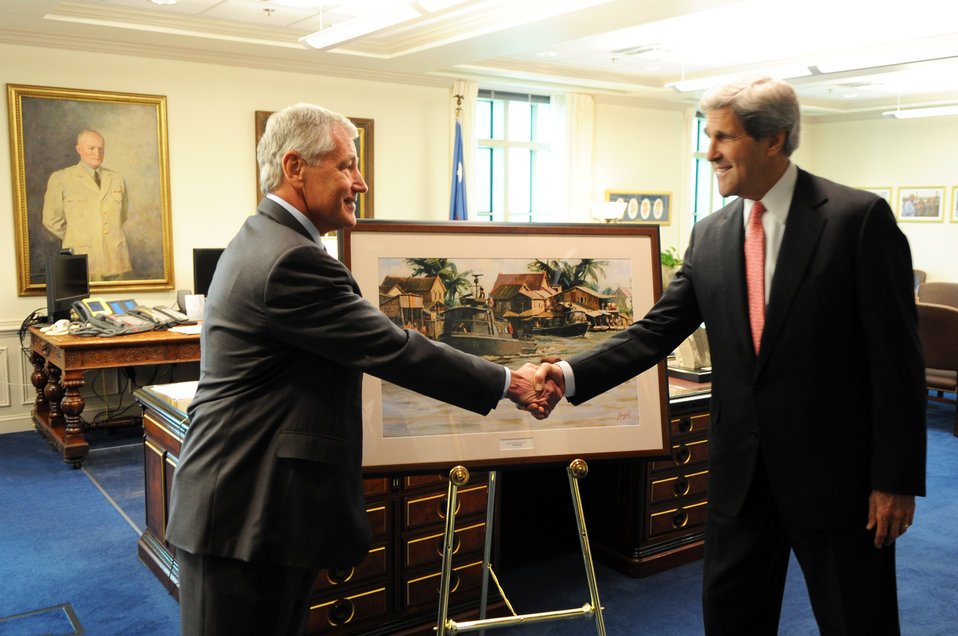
Secretary Kerry Admires a Painting by a Colorado Artist

U.S. Secretary of State John Kerry admires a painting by a Colorado artist that U.S. Secretary of Defense Chuck Hagel presented him before a meeting at the Pentagon in Arlington, Virginia, on May 6, 2013, showing a Swift boat in Vietnam. Secretary Hagel, a fellow Vietnam veteran, found it in the Pentagon art collection and thought of Secretary Kerry, who commanded a Swift boat in Vietnam. It will soon be displayed at the State Department.